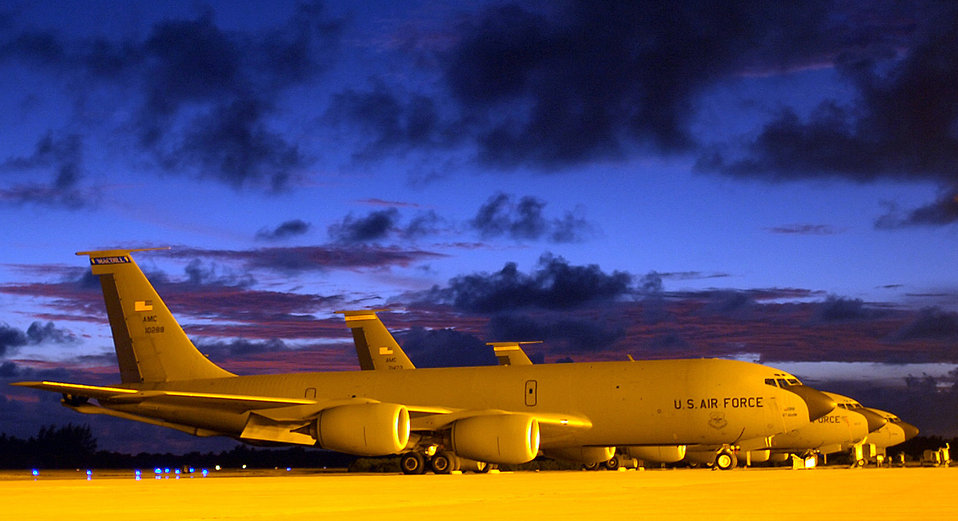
Program aims to eliminate bird threat to aircraft

These KC-135 Stratotankers parked on the ramp of a forward operating location Sunday, April 23, 2006, provide fuel to B-52 Stratofortresses that fly in support of Operation Enduring Freedom. The 40th Air Expeditionary Group safety office here manages the bird aircraft strike hazard program, eliminating that threat so that aircraft can complete their combat missions.